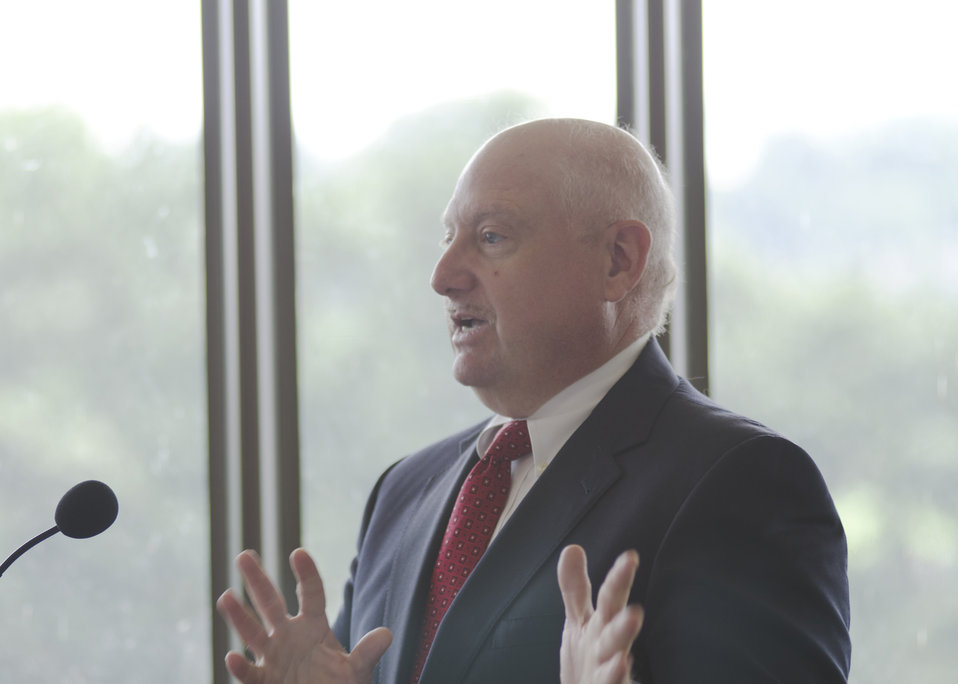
U.S. Department of Agriculture (USDA) Farm Service Agency (FSA) Assistant Deputy Administrator for Farm Loan Programs James Radintz speaks at the first business meeting of the U.S. Department of Agriculture’s (USDA) Council for Native American Farming and Ranching (CNAFR) held at the National Museum of the American Indian in Washington, D.C., on Tuesday, Aug. 14, 2012. CNAFR was created to advise the Secretary on ways to eliminate barriers to participation for Native American Farmers and Ranchers in USDA programs. The Council was established as part of the Keepseagle settlement, and is conducted under the oversight of USDA's Office of Tribal Relations under the Office of the Secretary of Agriculture.